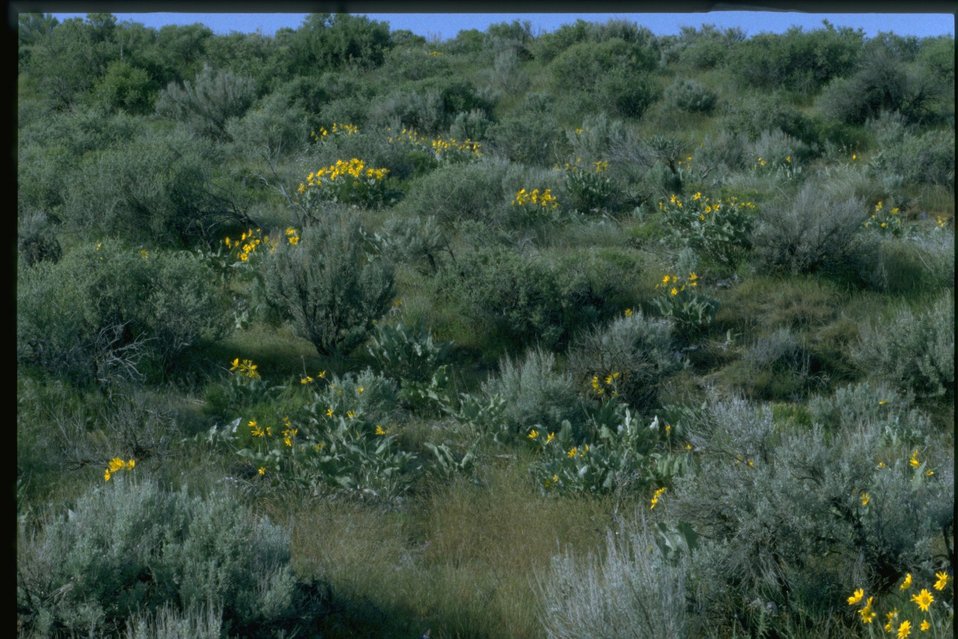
Arrowleaf Balsam Root (Balsamorhiza sagittata) habitat.